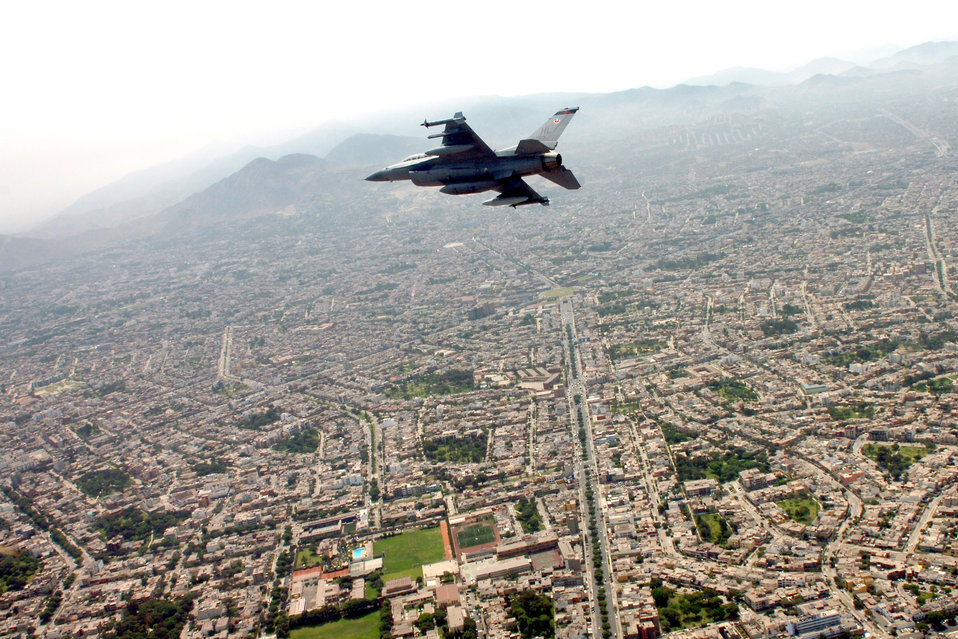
Airmen work alongside Peruvian military during joint exercise

An F-16 Fighting Falcon flies over Lima, Peru, Feb. 15 to participate in a joint air show with the Peruvian air force. The F-16 is from the 34th Fighter Squadron at Hill Air Force Base, Utah.